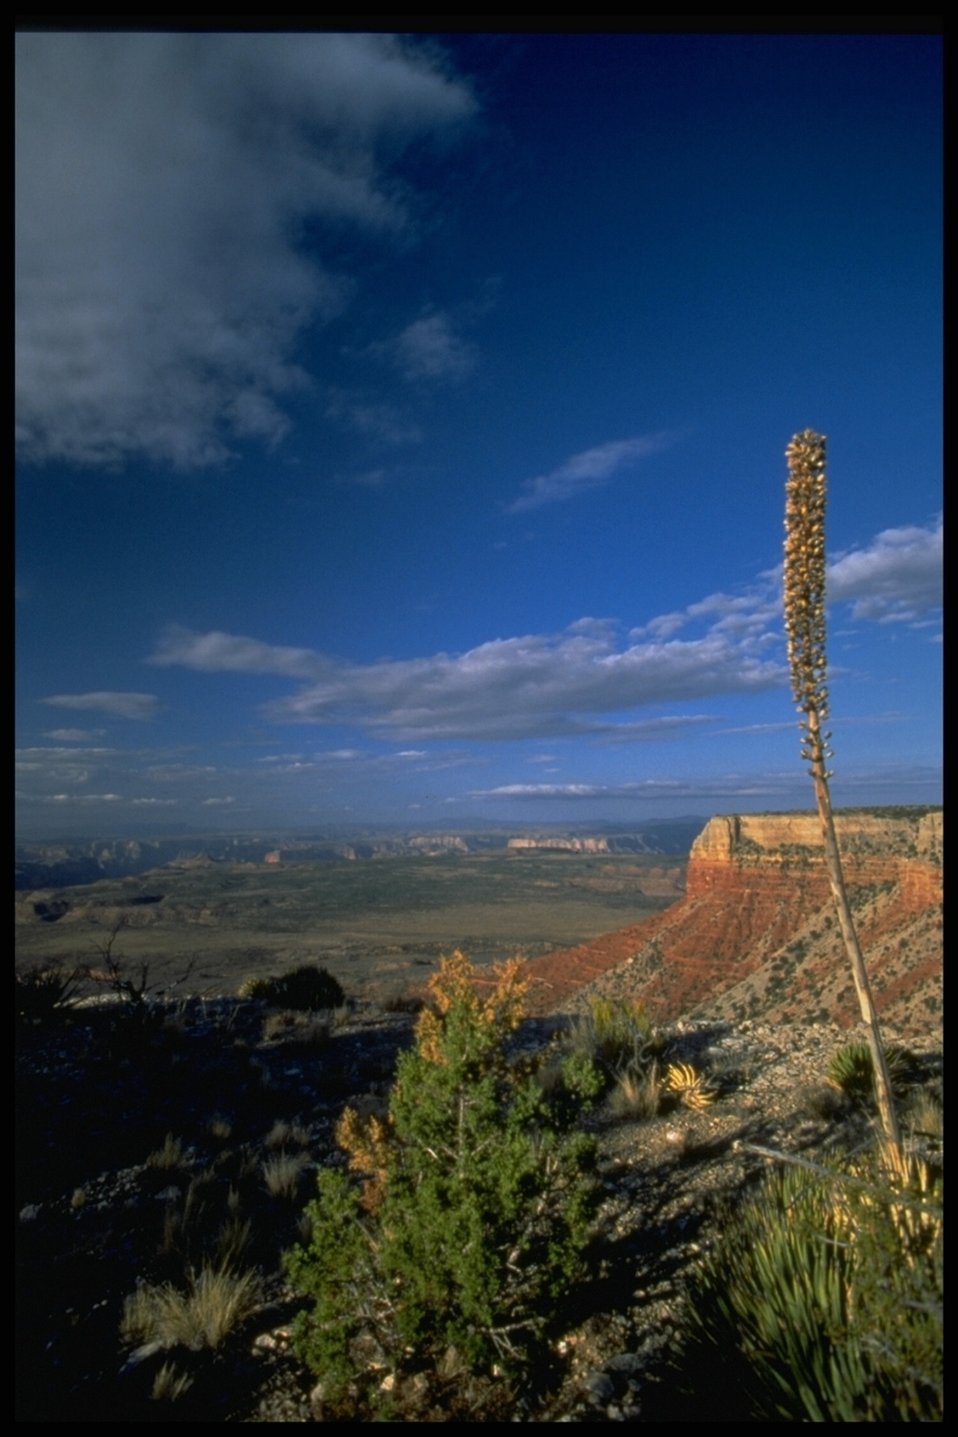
A wonderful view of the Parashant National Monument with a nice overveiw of the canyon.